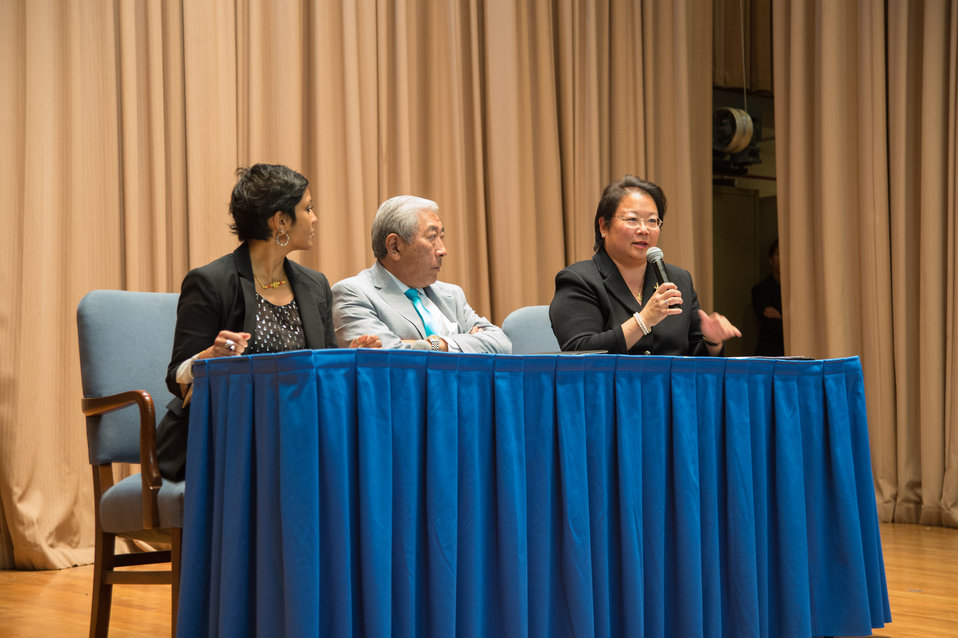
Daphne Kwok, Commissioner and Former Chair, President’s Advisory Commission on Asian American and Pacific Islanders participated in a panel discussion on civil rights and leadership U.S. Department of Agriculture (USDA) in Washington, D.C. on Thursday, May 22, 2014. The theme of the event was, “Diverse Leadership and Expanding Opportunity: Am Imperative for America.” The theme of the event was, “Diverse Leadership and Expanding Opportunity: Am Imperative for America.” To Ms. Kwok’s left are fellow panelists Floyd Mori, President and CEO, Asian Pacific American Institute for Congressional Studies (APAICS) and Suman Raghunathan, Executive Director, South Asian Americans Leading Together (SAALT).